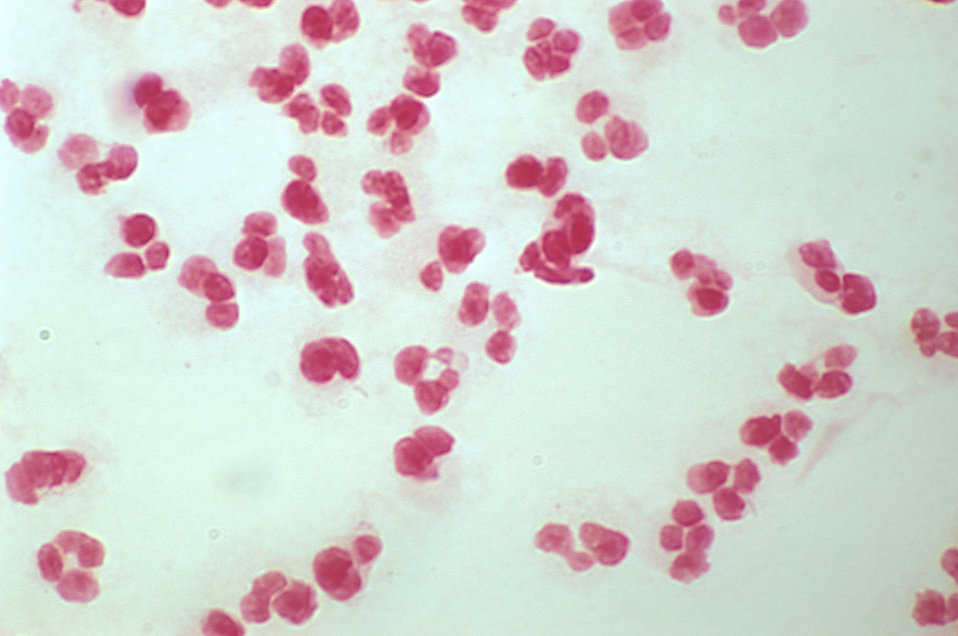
Gram stain, urethral exudate, from male with urethritis; note the lack of gram negative intracellular diplococci.